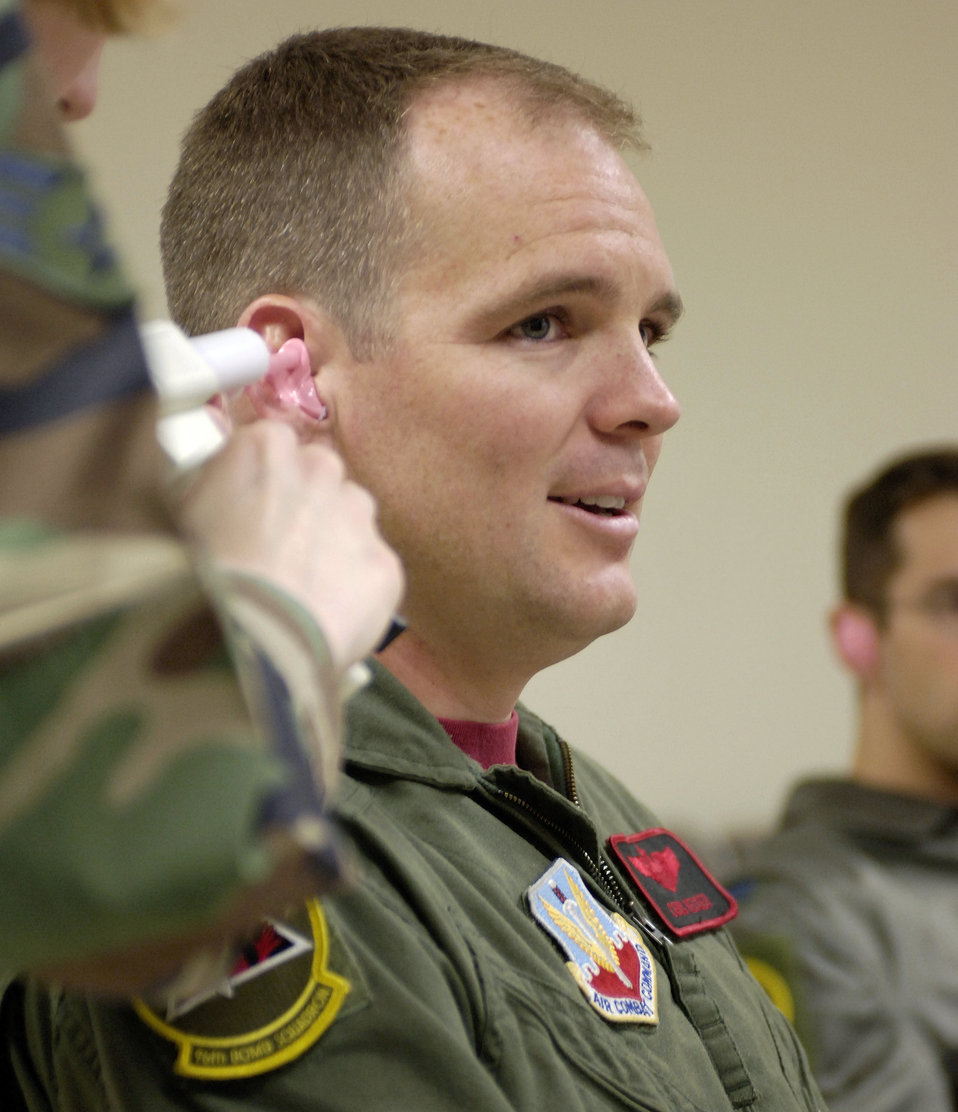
Can you hear me now?

BARKSDALE AIR FORCE BASE, La. (AFPN) -- Senior Airman Angela Stapperich uses a silicone material to mold the ear of Maj. Chris Recker. The mold will be used to create the Air Force's newly approved attenuating custom communications earpiece system, or ACCES. Each earpiece is custom-fit to the individual's ear canal and contains a built-in speaker that connects to an aircraft's communication system. The earpieces are designed to help enhance radio fidelity, reduce ambient noise, increase situational awareness and protect against potential hearing loss. Airman Stapperich is with the Air Force Research Laboratory at Wright-Patterson Air Force Base, Ohio. Major Recker is assigned to the 96th Bomb Squadron.